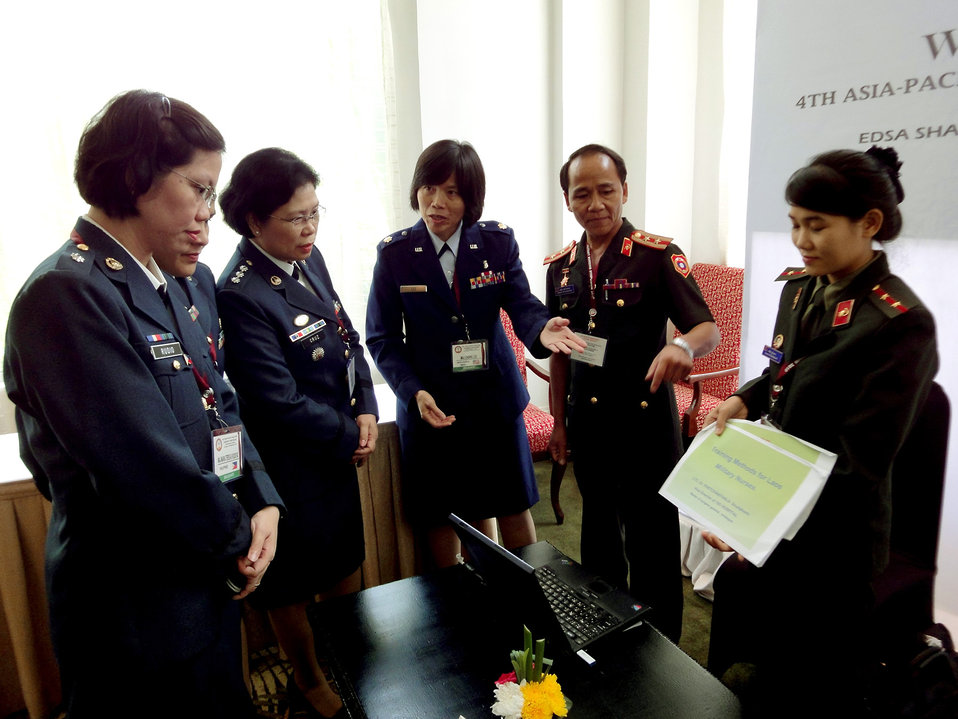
Miltary nursing symposium

Maj. Chung Lee (center) assists the Laos delegations during a group discussion on Laos' military nursing history as part of the 4th annual Asia-Pacific Nursing Conference Symposium, where more than 200 nurses from 13 countries were in attendance. The symposium was designed to help nurses in senior leadership positions share ideas and practices in order to build relations between Asia-Pacific countries. Major Lee is the 13th Air Force international health specialist from Joint Base Pearl Harbor-Hickam, Hawaii.